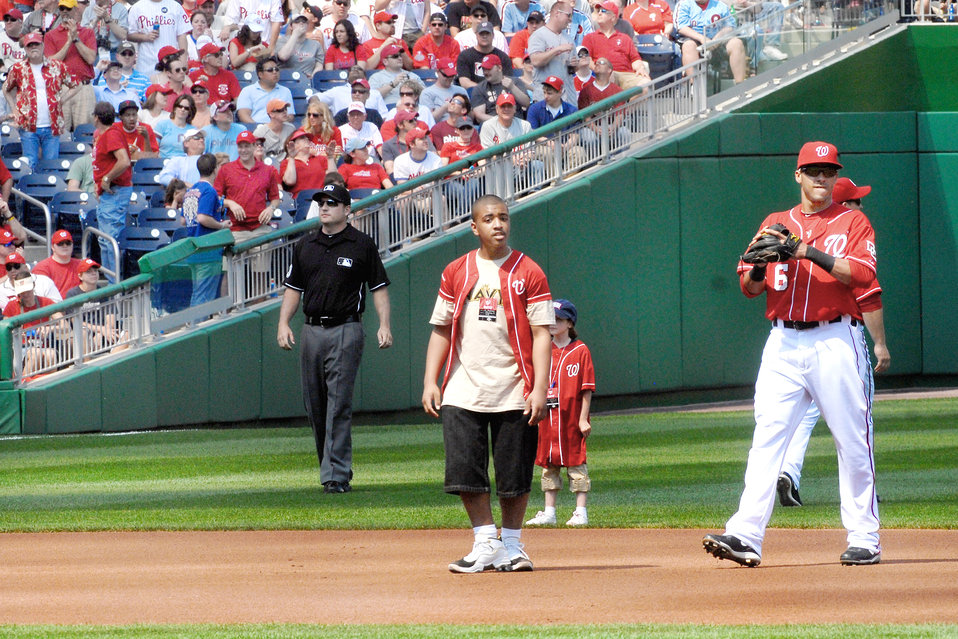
President throws pitch, greets children at Nationals game

Izaiah Robinson (center) whose father is deployed in Bahrain, was one of nine military children with a deployed parent invited to spend the opening day of baseball season April 5, 2010, at Washington Nationals Ball Park in Washington, D.C. The children took the field with the Nationals' nine starting players and saw President Barack Obama throw out the first pitch.